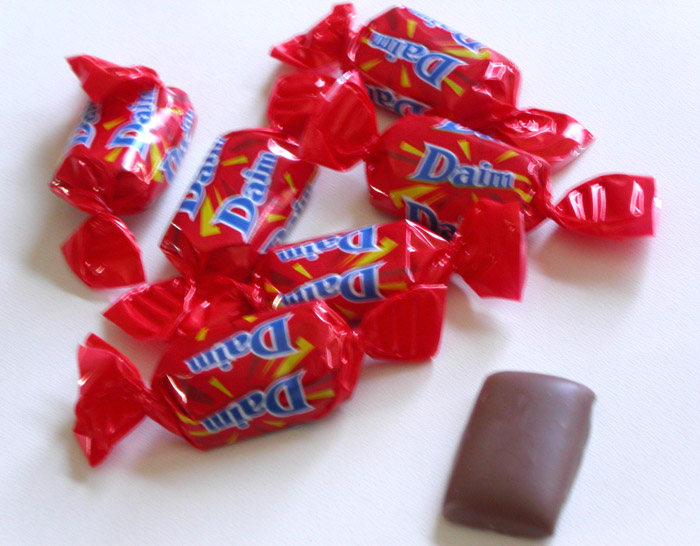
Daim Schokoriegel / Daim chocolate